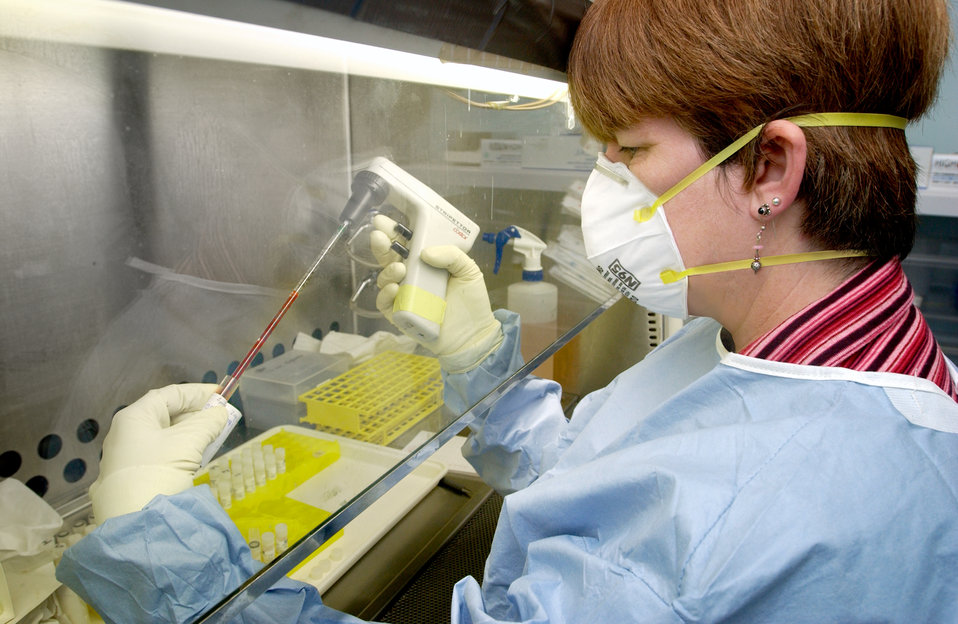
This is Deborah Cannon of the Special Pathogens Branch as she processes SARS specimens.